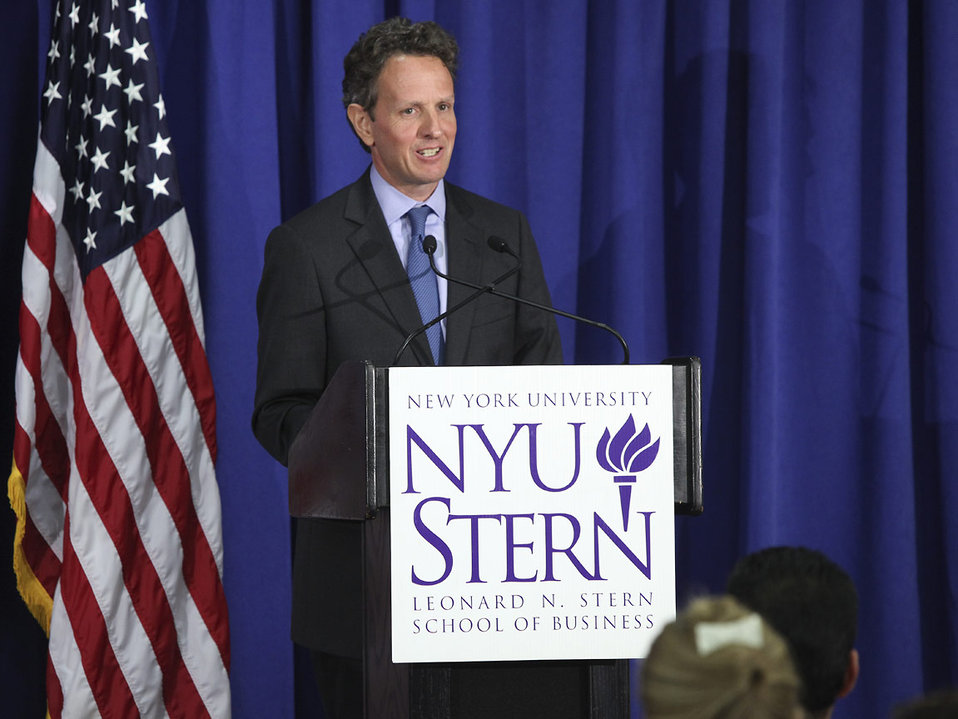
Secretary Geithner Delivers Remarks on Financial Reform at NYU, 8/2/2010

On Monday, Secretary Geithner delivered remarks at New York University's Stern School of Business in which he discussed the path forward for financial reform. In particular, he detailed steps the government will take over the coming months to ensure that these reforms provide certainty and strike the right balance between reining in financial excess and maintaining the benefits of financial innovation.